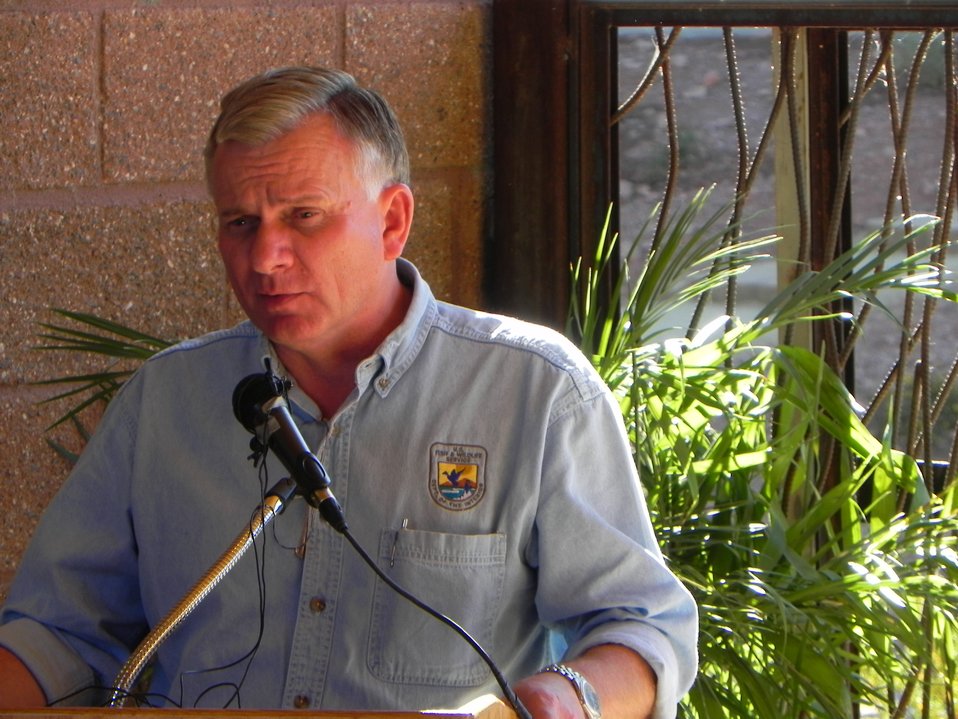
Black-footed Ferret Breeding Center at the Phoenix Zoo

Dr. Peter Gober, USFWS Black-footed Ferret Recovery Coordinator providing remarks at dedication of Black-footed Ferret Breeding Center at the Phoenix Zoo on 11/18/2010.